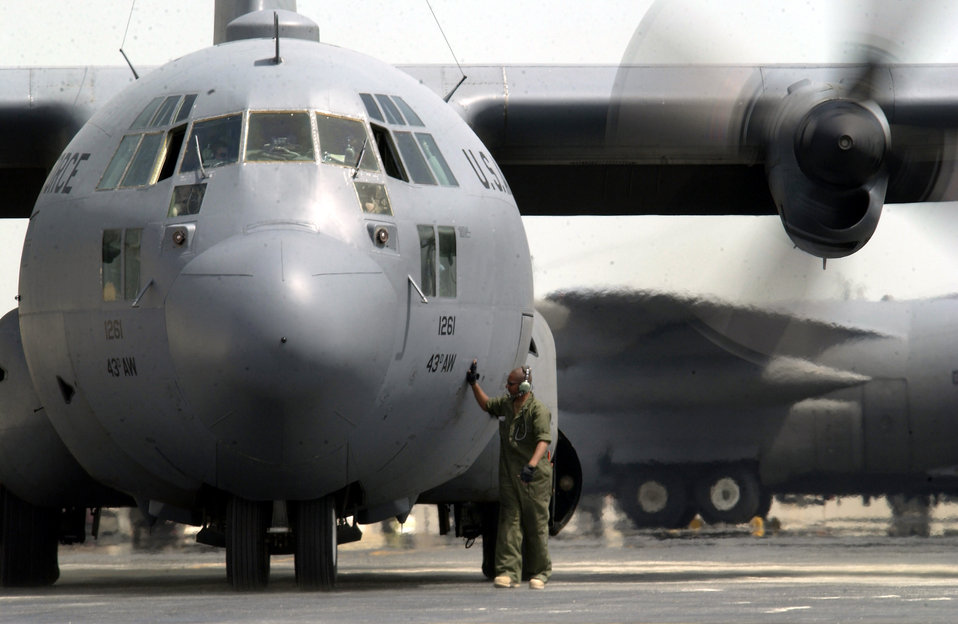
Props turning

OPERATION ENDURING FREEDOM -- A C-130 Hercules crew chief from the 64th Air Expeditionary Group conducts last minute check on his aircraft prior to take off March 17 at an undisclosed deployed location in support of Operation Enduring Freedom.